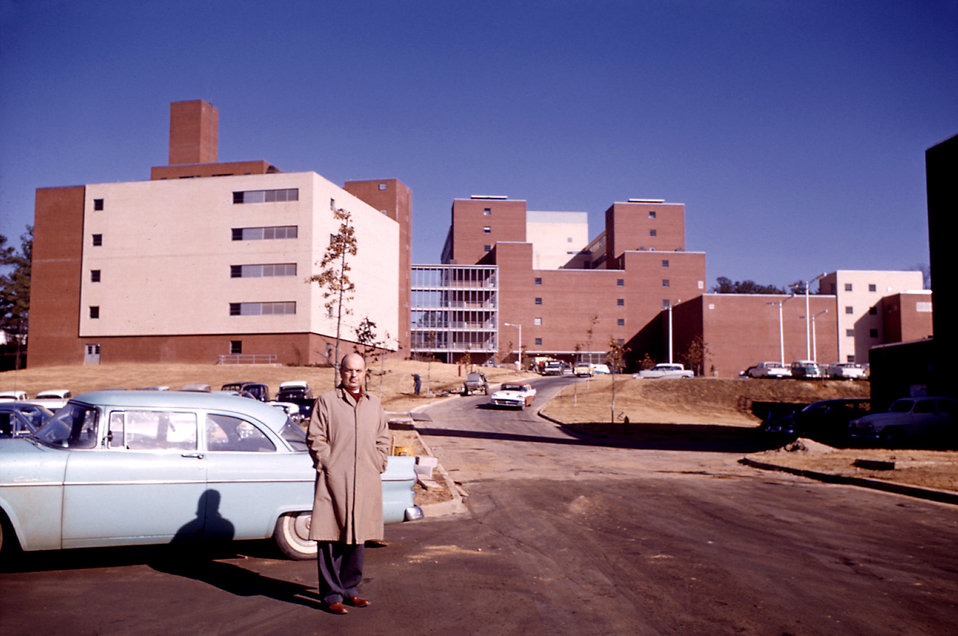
This 1961 photograph shows Dr. Alex Langmuir standing before CDC buildings at the Clifton Road, Atlanta, Georgia location.